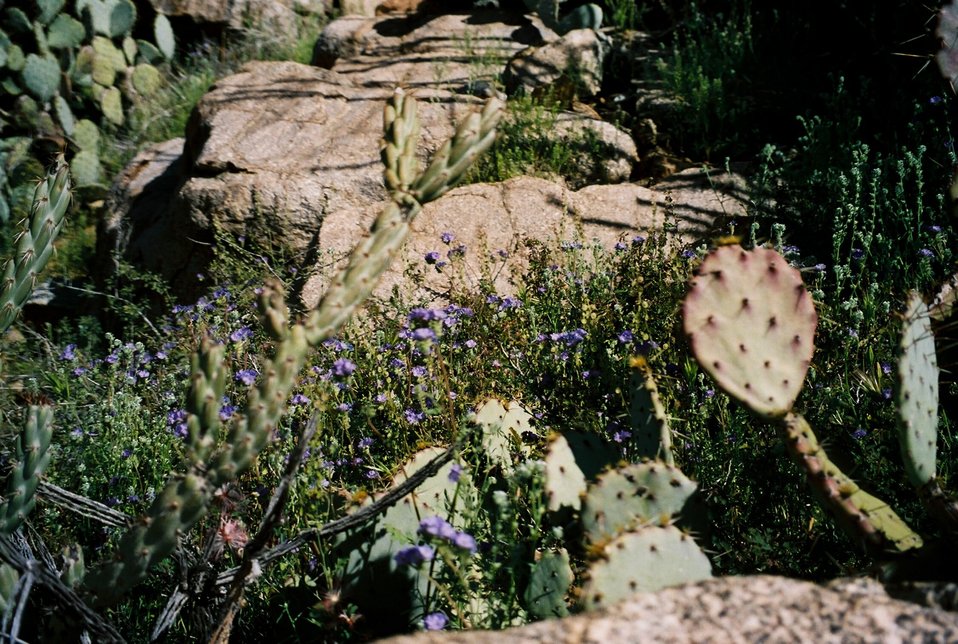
Prickly Pear cacti grow all over the Agua Fria National Monument.